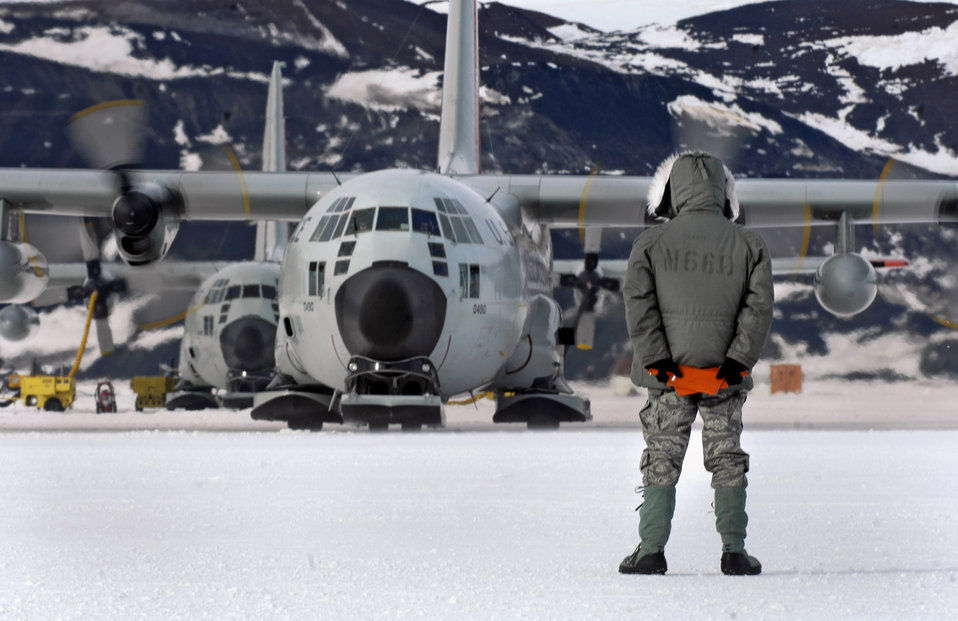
Ice, ice baby!

Tech. Sgt. Kevin Call waits to marshal an LC-130 Hercules from its parking spot on the annual sea ice runway Nov. 26 near McMurdo Station, Antarctica, during Operation Deep Freeze. Sgt. Call is a crew chief with the New York Air National Guard's 109th Airlift Wing. Ski-equipped LC-130s, crews and support personnel are supporting the 13th Air Force-led Joint Task Force Support Forces Antarctica, Operation Deep Freeze. Operation Deep Freeze is a unique joint and total force mission that has supported the National Science Foundation and U.S. Antarctic Program that began in 1955.